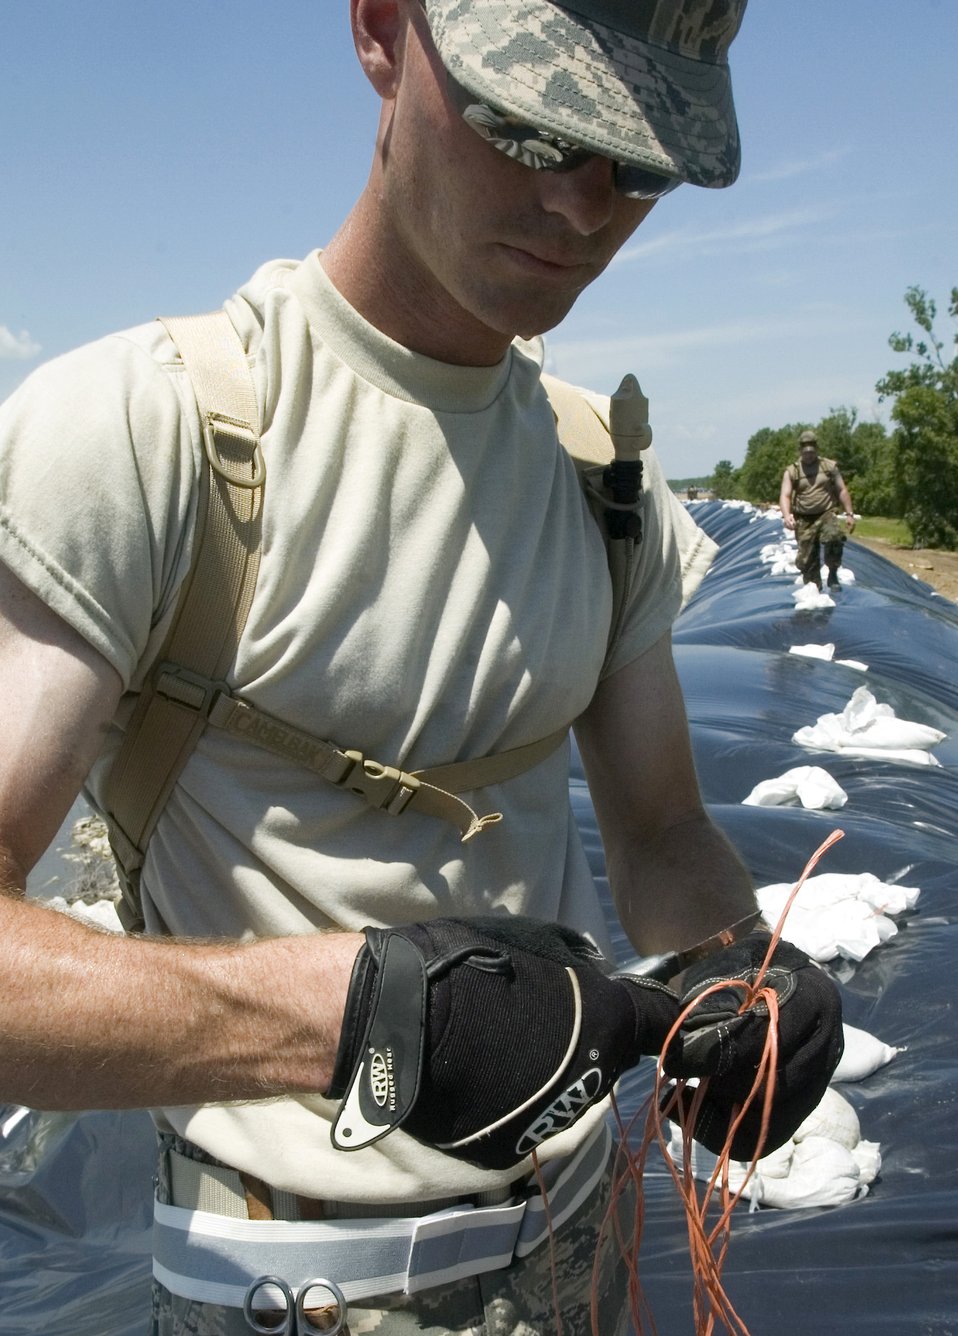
Illinois Air National Guard provides help

Staff Sgt. Eric Bell cuts rope to secure sand bags in place June 19 to help prevent erosion of the Sny levee near Pleasant Hill, Ill. The Sny levee protects communities along the Mississippi River for 52-miles. Airman Rath is an Air National Guardsman assigned to the 183th Fighter Wing located in Spring Field, Ill.